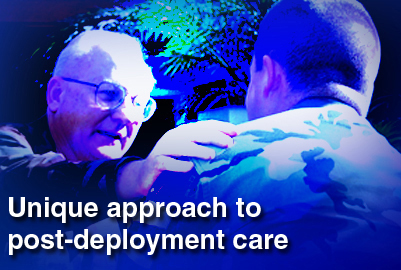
Post-deployment care